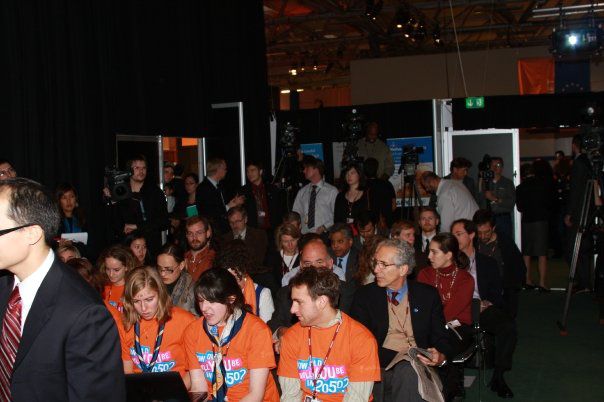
Youth Delegation at COP-15

Members of the youth delegation at COP-15 participate in a DVC with U.S. students in Washington and Virginia sponsored by the U.S. Forest Service at the U.S. Center at COP15, Bella Center, Copenhagen, Denmark on December 11, 2009.